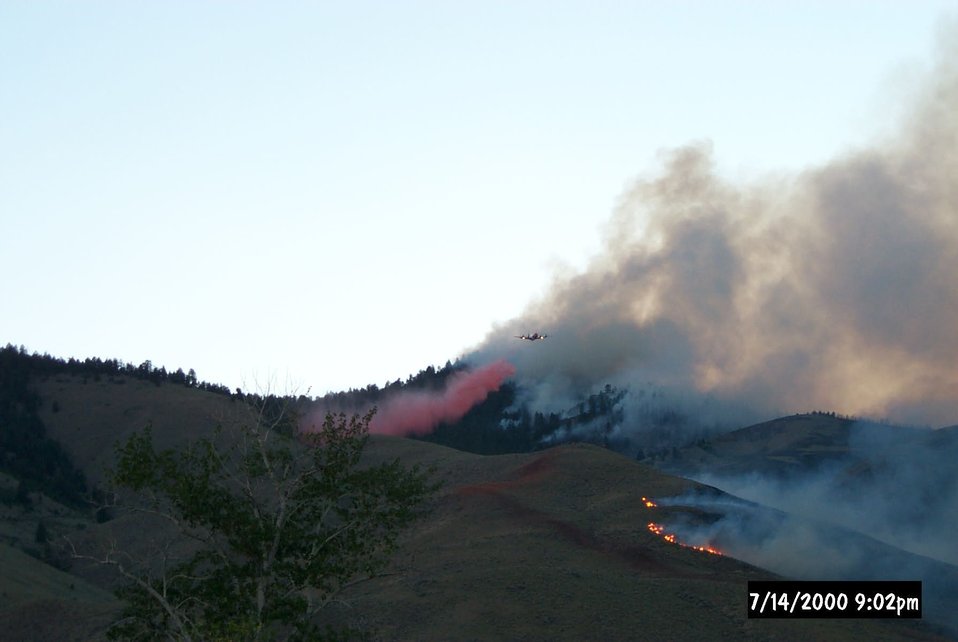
Plane dropping retardant Fire Fenster Fire Salmon Field Office USRD Upper Snake River District